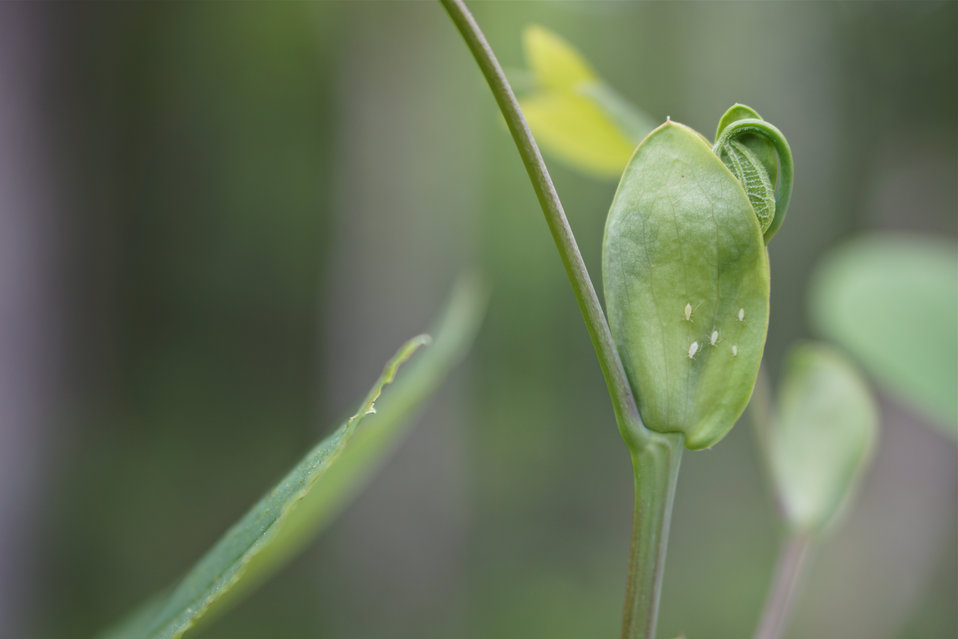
Young poplar leaves emerging

In May, bog conservationists from Tennessee, North Carolina, and Georgia convened in the north Georgia mountains for the spring, 2014 meeting of the Bog Learning Network. The event provided an opportunity for biologists to see, first hand, the result of management efforts at two north Georgia bogs. More importantly, the outings provided an opportunity to share innovative approaches to bog management, such as the role of the Georgia Plant Conservation Alliance in conserving rare plants and coordinating a cadre of volunteers to work on bog management.

The Bog Learning Network was convened in the winter of 2013 as a way to bring together people working for bog conservation across the Southern Appalachians. Southern Appalachian bogs are one of North America’s rarest habitats and home to many rare plants and animals.